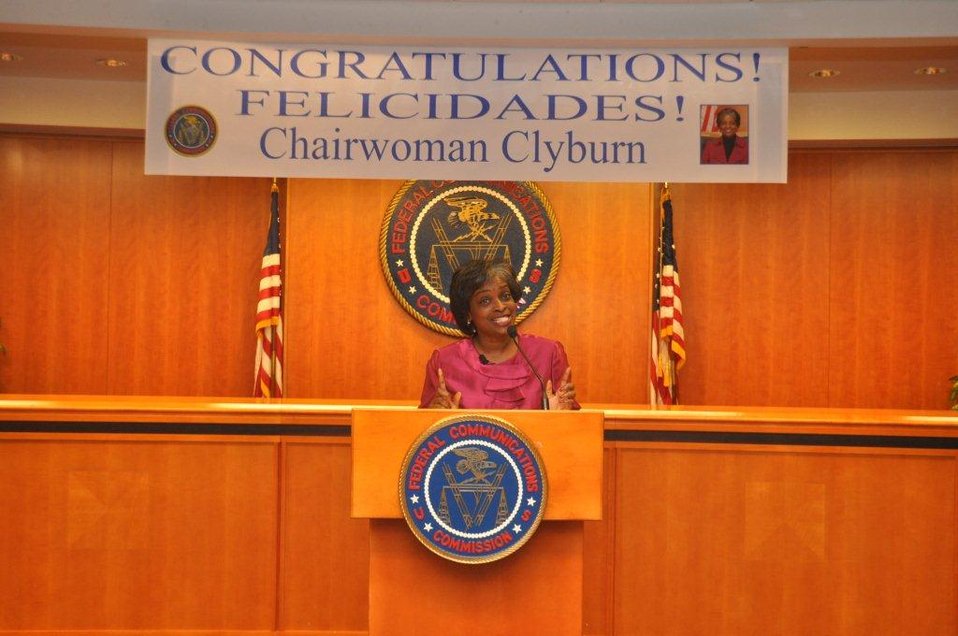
Acting Chairwoman Mignon Clyburn giving statement to FCC staff